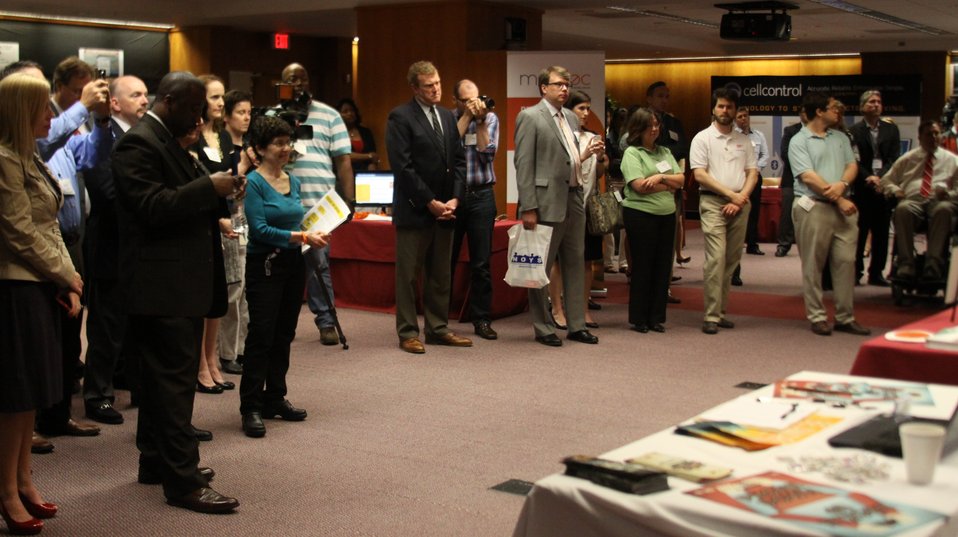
Distracted Driving Technology Showcase April 19, 2013